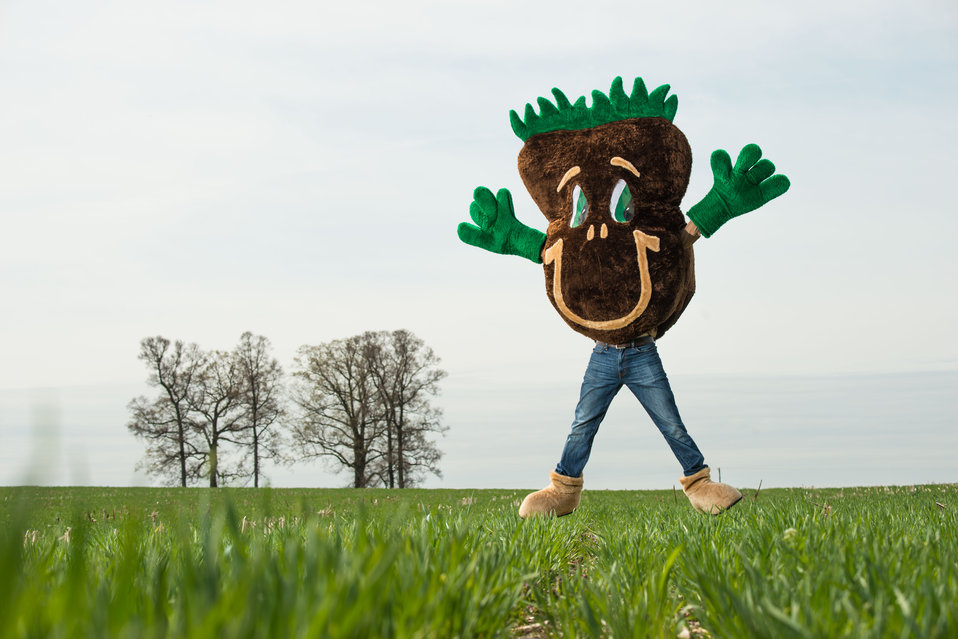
The U.S. Department of Agriculture’s (USDA) Natural Resources Conservation Service (NRCS) mascot Sammy Soil on the Sunny Ridge Farm in Laytonsville, MD on Monday, Apr. 28, 2014. The Sunny Ridge Farm owned by the Stabler family uses a number of conservation practices to promote soil health and water quality. No-till cropping systems use cover crops that help water soak deep into the soil and machines work lightly on top of the soil preserving vertical pores that are water’s pipeline to the roots. Cover crops prevent erosion, improve soil health, hold water, supply nutrients, and suppress weeds and pests. Fenced waterways keep livestock away from the streams and drainage to low points of fields, which allows grass, trees and other vegetation to grow. The plants take up nutrients from the livestock effluent, reducing pollution to waterways. The farm also has a well-designed agrichemical facility for an environmentally safe area to handle and store tanks of on-farm chemicals.